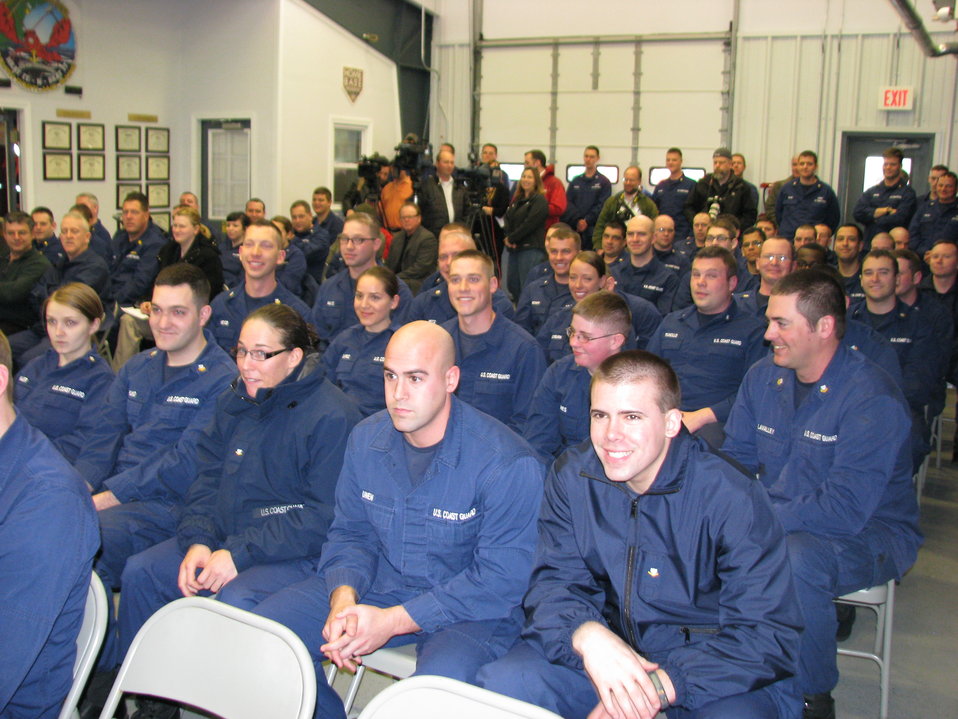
Agriculture Secretary Tom Vilsack speaks to the crewman of the buoytender USCG Marcus Hanna at the U.S. Coast Guard Station in South Portland, ME on Thursday, Mar. 14, 2013. Secretary Vilsack highlighted the importance of nutrition to America’s military readiness. Today, only a quarter of Americans aged 17 to 24 are eligible to serve in the armed forces – in part because many are overweight or obese.